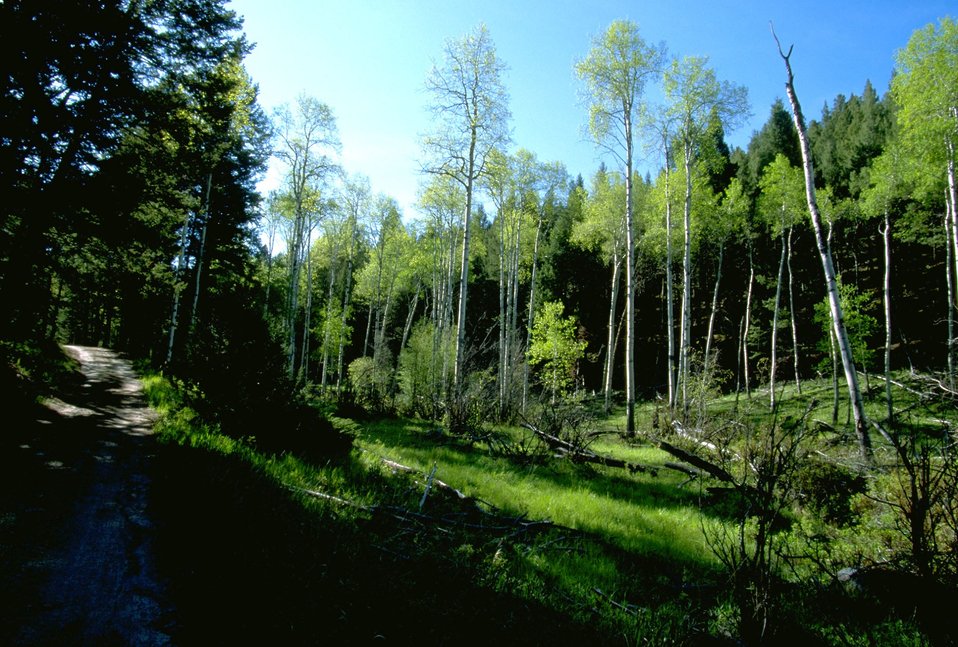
MacLean Road running through a dense grove of Aspen and fir trees